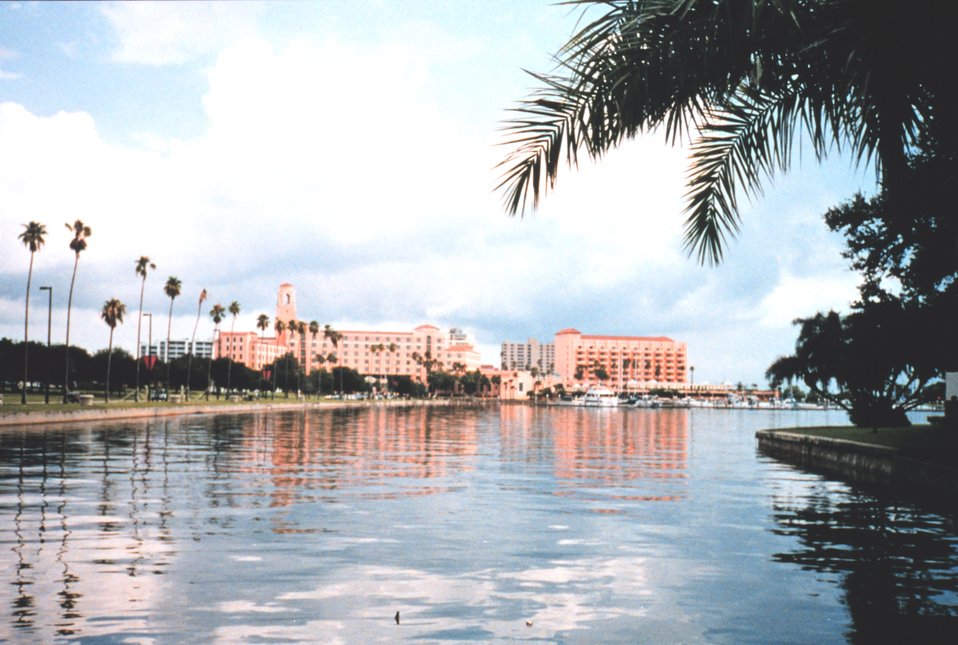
Hotel on Miami waterway